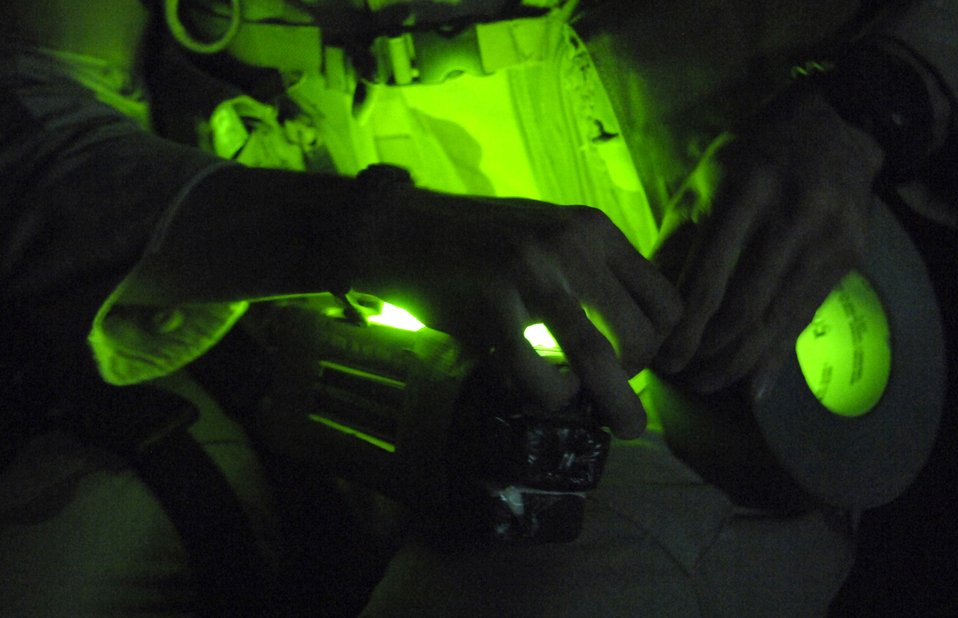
Remote control

Senior Airman Scott White tapes a chemlight to a package of C-4 explosives before sending a Talon robot to inspect a possible improvised explosive device, or IED, at a location southwest of Baghdad, Iraq, on Wednesday, June 28. The C-4 is used to detonate the IED. Airman White and two other explosive ordnance technicians were called to the scene to clear the area. He is with the 447th Expeditionary Civil Engineer Squadron, and is deployed from Nellis Air Force Base, Nev.